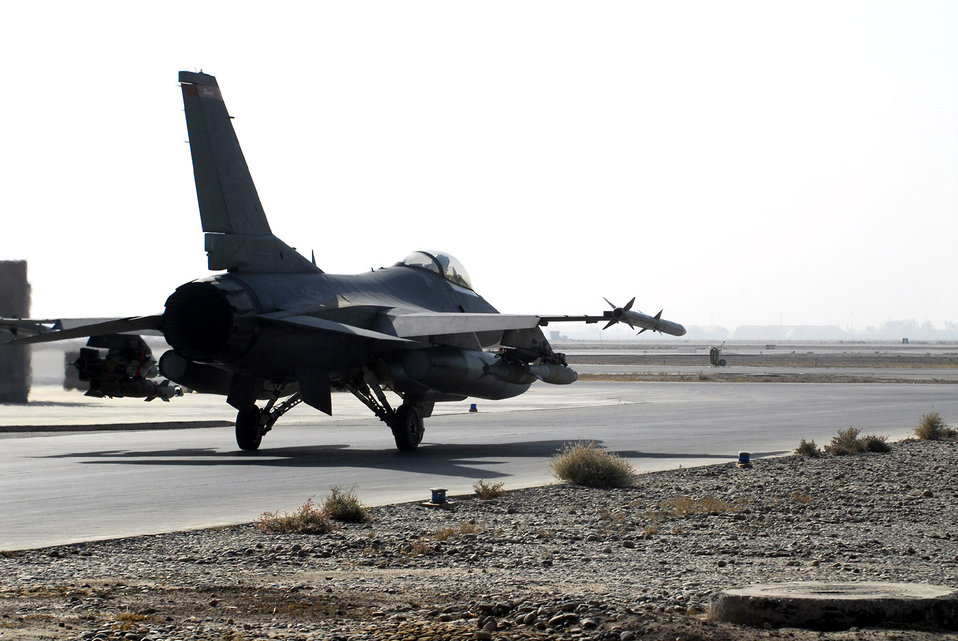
Nov. 25 airpower summary: F-16s provide overwatch

Capt. Travis Keenan taxies an F-16 Fighting Falcon to the runway for a mission on Thanksgiving Day at Balad Air Base, Iraq. The 22nd Expeditionary Fighter Squadron conducts combat missions in support of ground forces operating in Iraq. Captain Keenan, a 22nd EFS pilot, is deployed from Spangdahlem AB, Germany.